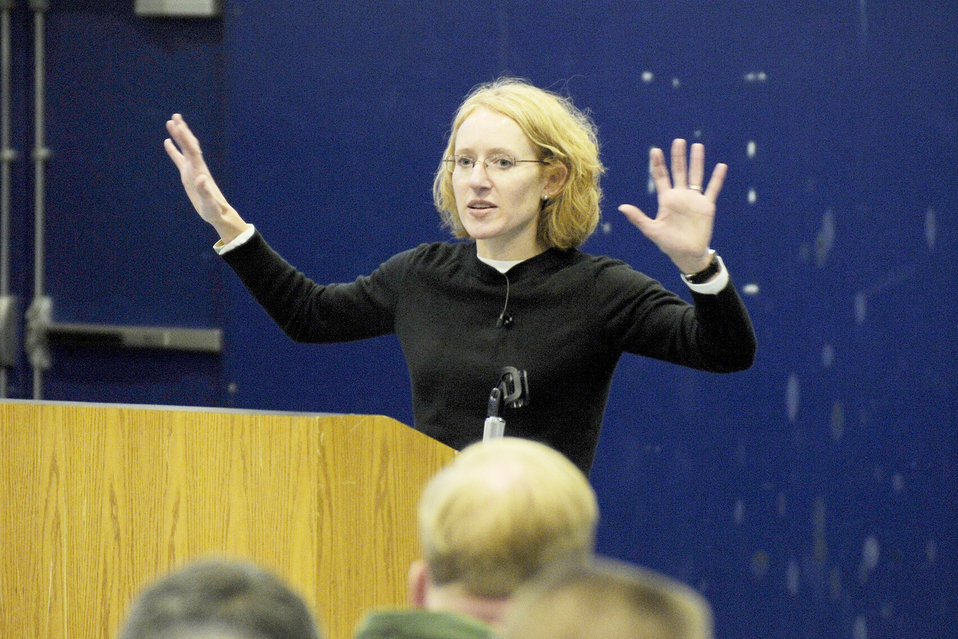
Schriever Wingman Day

Dr. Michelle Wine, behavioral health consultant, discusses the Science of Suicide to members of the 50th Space Wing during Wingman Day Dec. 9, 2009, at at Schriever Air Force Base, Colo. Wingman Day is an Air Force-wide program that ocusing on safety, and financial, physical and emotional well being.